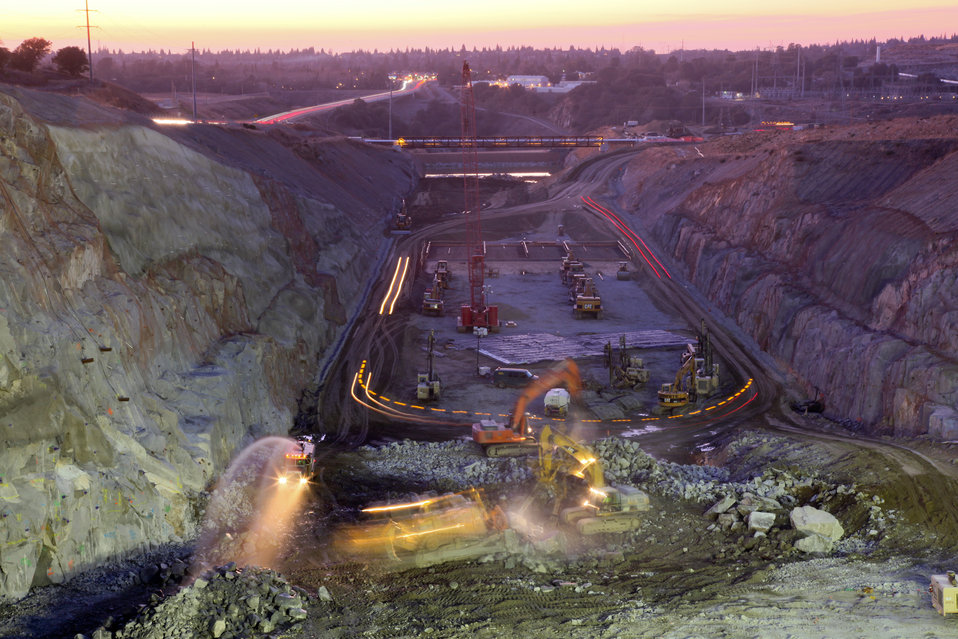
Twilight at the auxiliary spillway at the Folsom Dam

Excavation of Folsom Dam’s new auxiliary spillway continues into the night in Folsom, Calif., Jan. 13, 2012. The spillway will allow Folsom Dam to release water sooner and more safely. The project is part of the Folsom Dam Joint Federal Project, a joint effort of the U.S. Army Corps of Engineers Sacramento District, the U.S. Bureau of Reclamation, the Central Valley Flood Protection Board and the Sacramento Area Flood Control Agency to improve the safety of the dam and reduce flood risk for the greater Sacramento area.